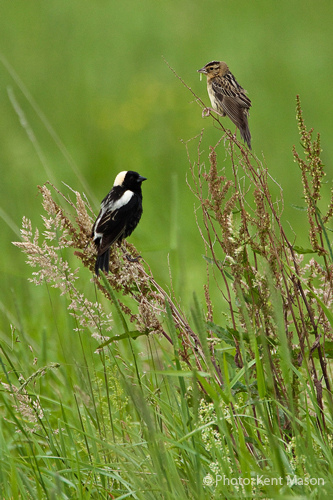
Grassland Birds